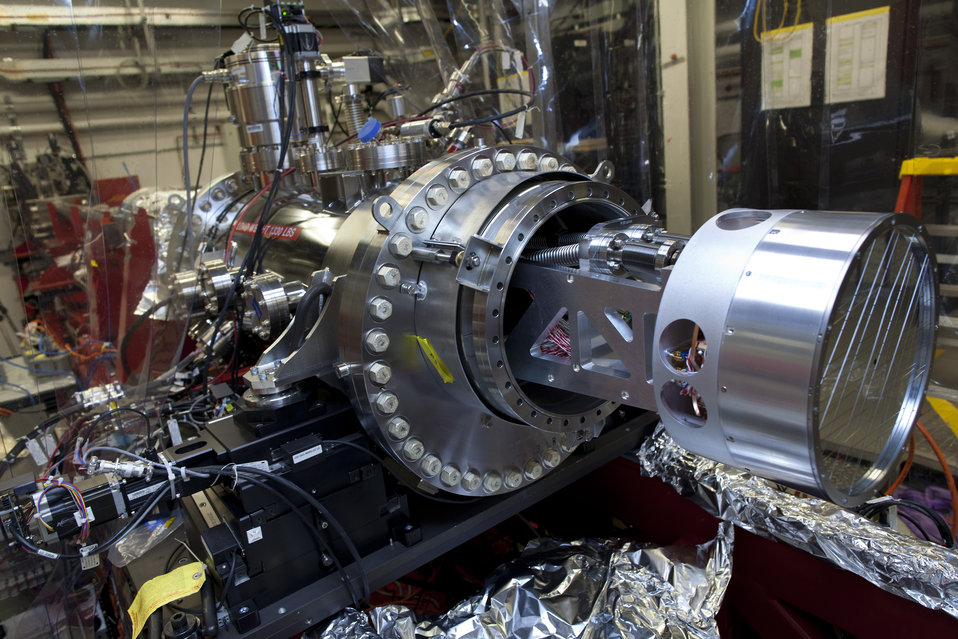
CXI detector in place and ready for testing at SLAC.